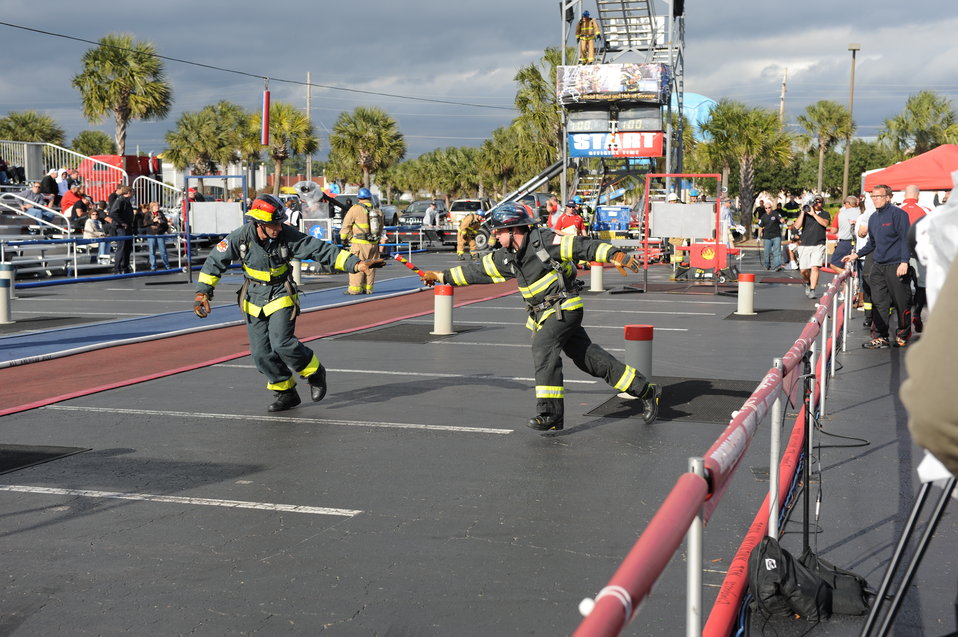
Air Force firefighters aim for the gold

Gerd Mueller, (left) a firefighter from Spangdahlem Air Base, Germany, rakes the handoff from Sascha Rech, a firefighter from Ramstein AB, Germany, during a team relay event at the World Firefighter Combat Challenge XX in Myrtle Beach, S.C., Nov. 17, 2011. Mueller and Rech are part of the four-man Consolidated U.S. Air Forces in Europe team, which includes current and former USAFE firefighters who are now stationed at Spangdahlem AB; Ramstein AB; Aviano AB, Italy; and Shaw AFB, S.C.